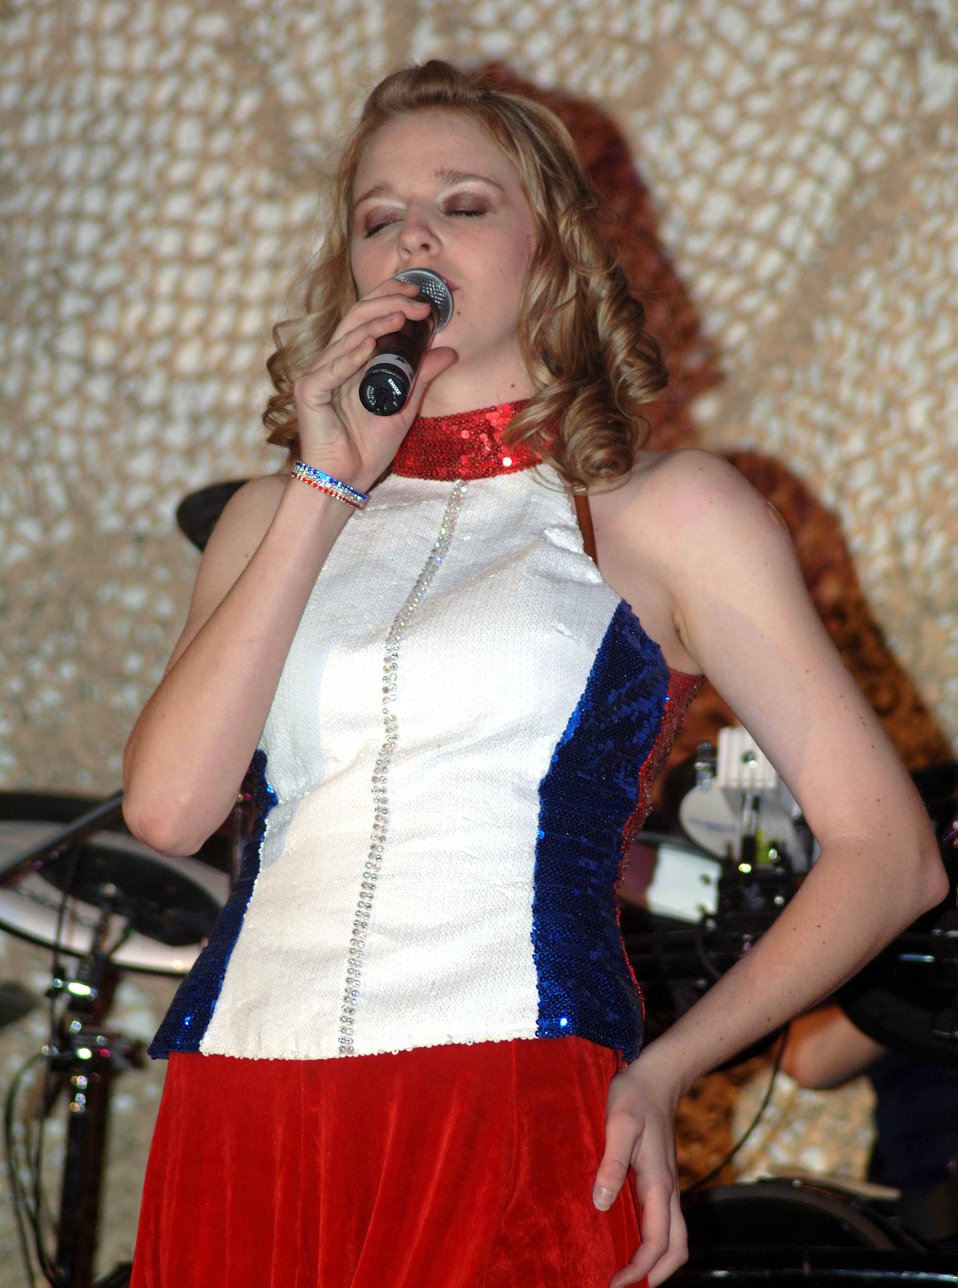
Tops in Blue rocks Bagram

Tops In Blue vocalist Senior Airmen Bethany Schwartzkopf performs for a large crowd Nov. 23 at Bagram Air Base, Afghanistan. Known as the Air Force's expeditionary entertainers, Tops in Blue travels to wherever U.S. troops are stationed. The elite group, made up of 35 talented entertainers, performs for servicemembers and their families throughout the world. Airman Schwartzkopf is a contracting specialist from Royal Air Force Lakenheath, England.